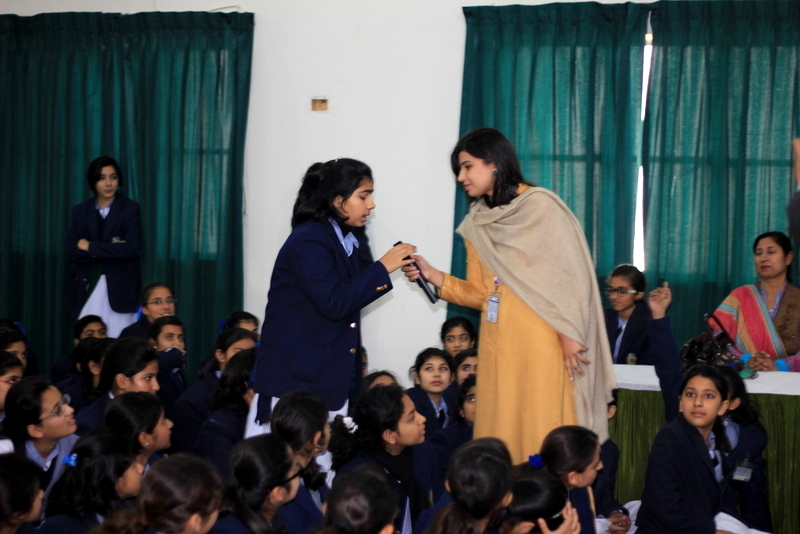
USAID Power Distribution Program-Energy Conservation Seminar at Multan Public School and Colleges for Girls, Multan.

More than 500 students along with principal & teachers attended the seminar & participated actively in the quiz session